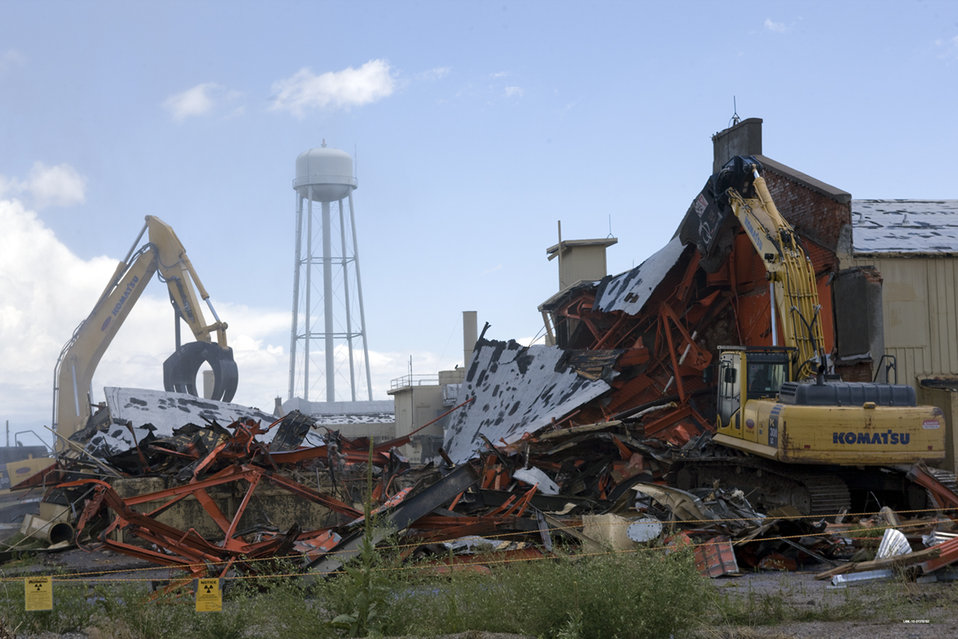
Efficient Recovery Act Work Leads to $6 Million in Savings

Efficient contracting and waste management has led to a $6 million cost savings for a $73 million American Recovery and Reinvestment Project at Los Alamos National Laboratory (LANL).

The savings has allowed for two additional large buildings to be added to the demolition schedule at LANL’s Technical Area 21 (TA-21). The $73 million in Recovery Act funds was already providing for the demolition of 22 buildings.